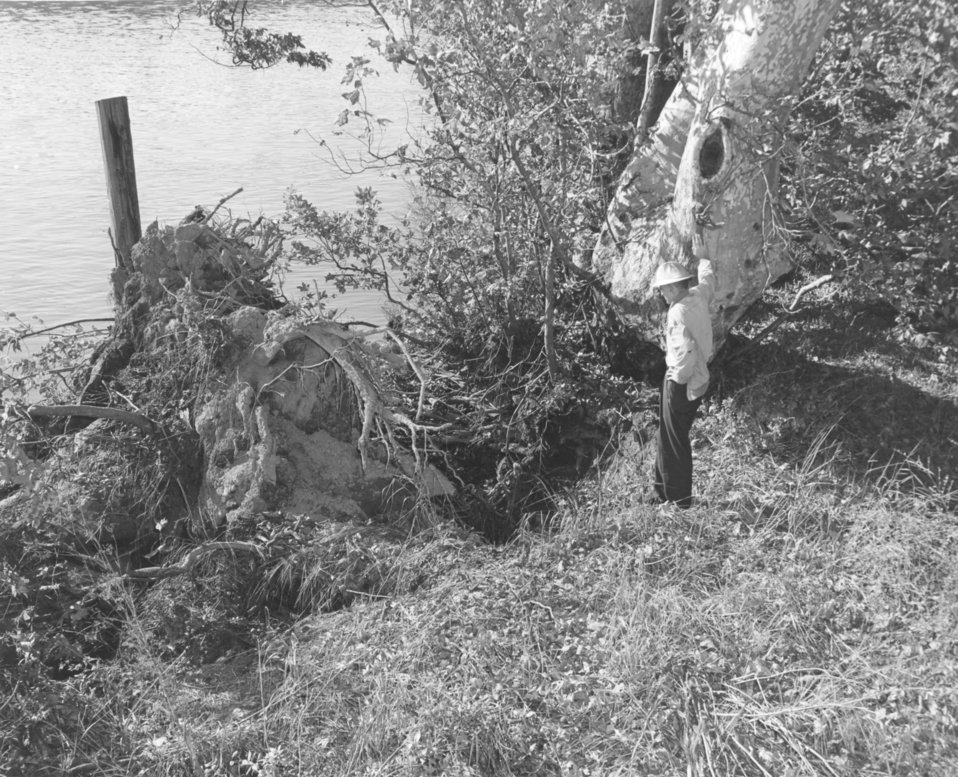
Toppled sycamore tree on Sacramento River levee

An historic photo of a toppled Sycamore tree on a Sacramento River levee near Clarksburg, Calif., shown in October 1962. An accompanying description reads: 'Here the heavy fallen Sycamore is shown in relation to the levee it pulled out of and the river it fell into. Trunk is about the same size as the tree that still remains precariously upright.'